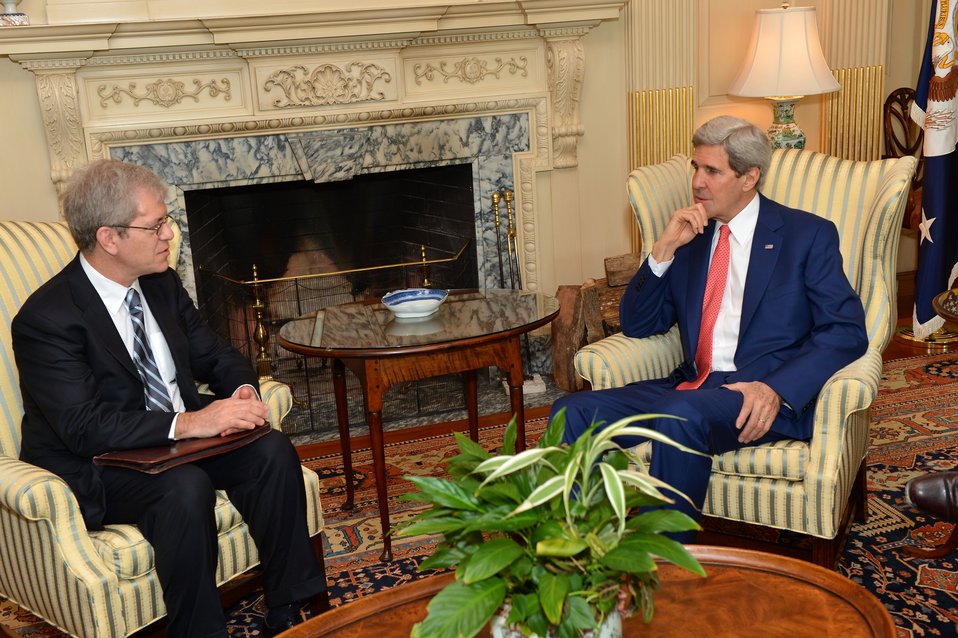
Secretary Kerry Speaks With AFSA President Silverman

U.S. Secretary of State John Kerry meets with Robert Silverman, President of the American Foreign Service Association, at the U.S. Department of State in Washington, D.C., on April 14, 2014.